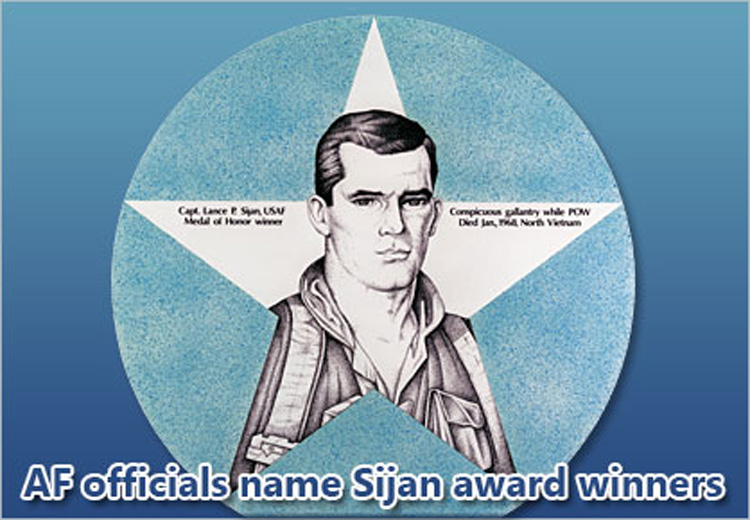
Air Force officials name Sijan award winners

Air Force officials recently recognized four Airmen with the service's 2008 Lance P. Sijan Air Force Leadership Award. The Sijan award annually recognizes Airmen who demonstrate outstanding leadership abilities.